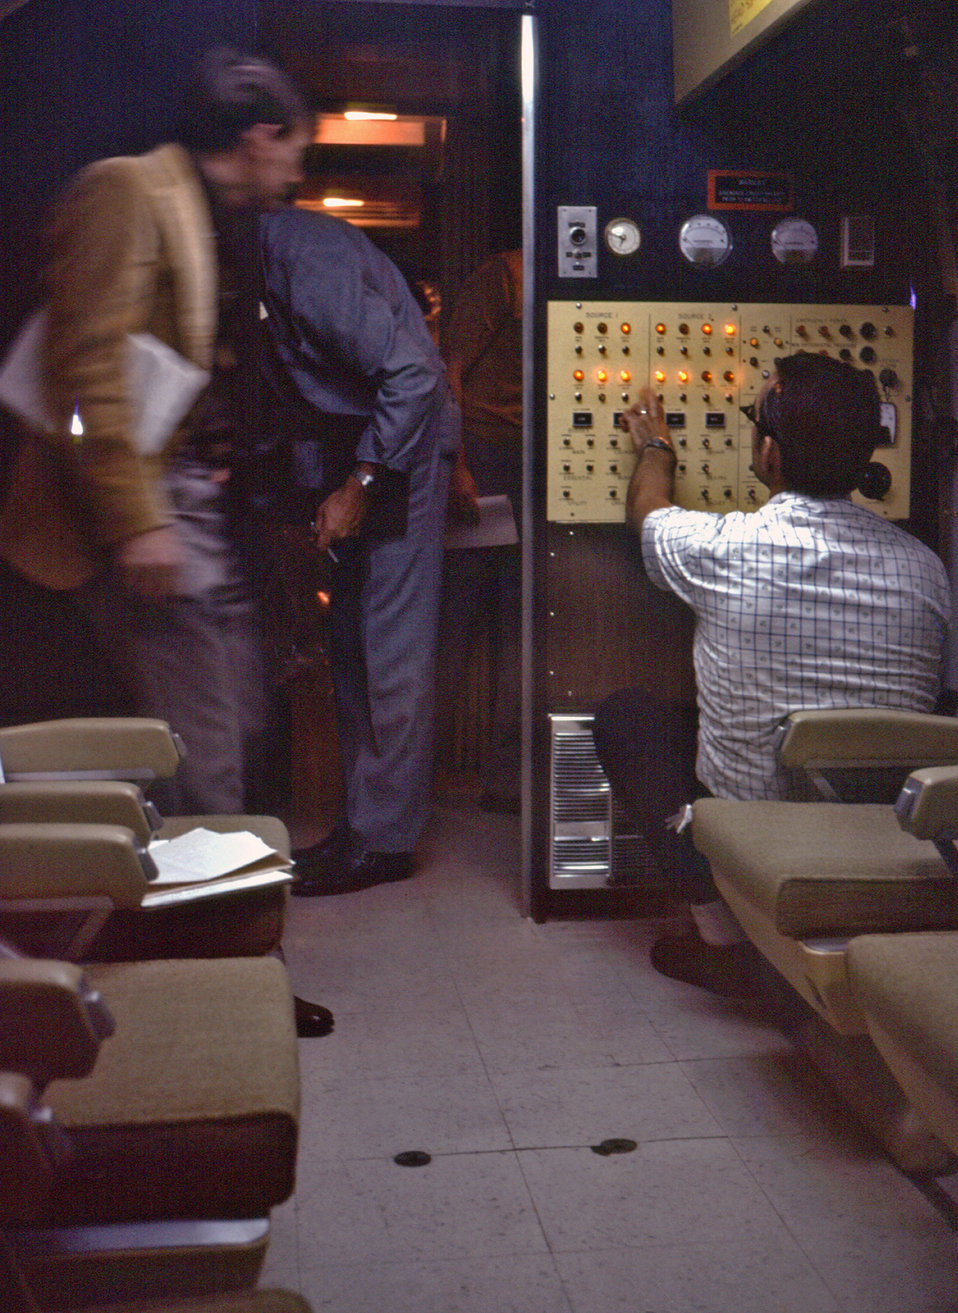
This 1976 photograph revealing the interior of CDC's mobile quarantine facility (MQF), showed an individual who was seated at right at the on-board control panel during a simulated medical quarantine exercise.